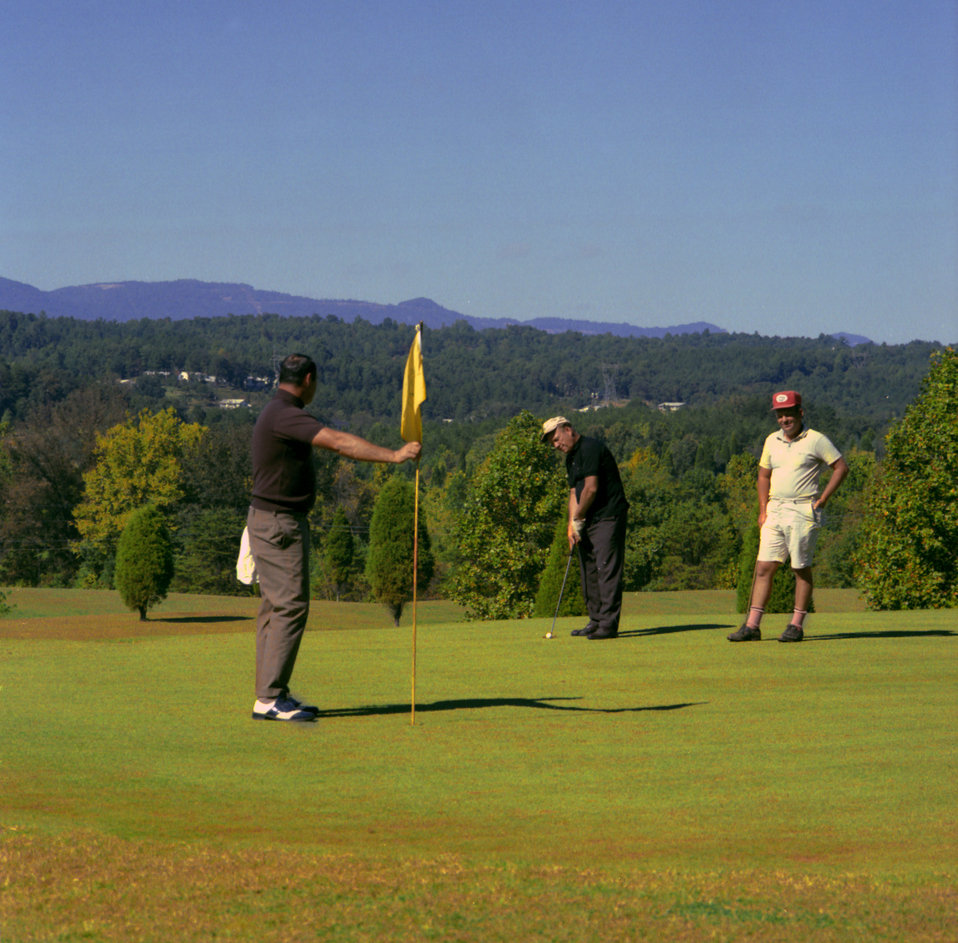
Golf Course Oak Ridge

70-265c DOE photo by Frank Hoffman Oak Ridge Tennessee Sept. 1970